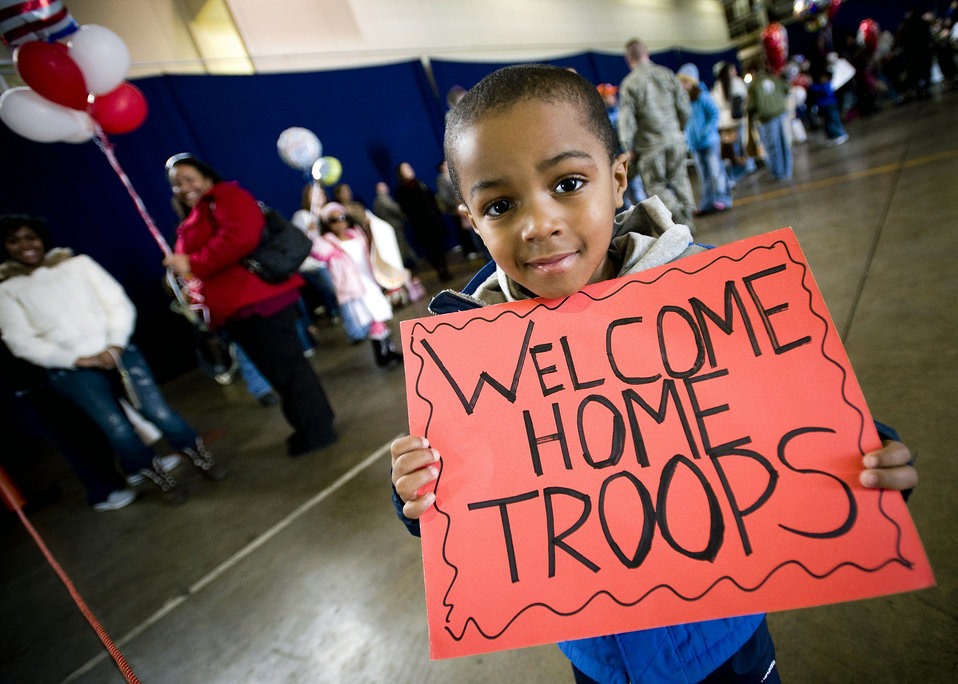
Misawa officials welcome home 300 deployed Airmen

John Parker Jr. displays a sign celebrating his father's return March 1 at Misawa Air Base, Japan. John waited with many other base members for the passenger airplane bringing friends and families home. John and his family are from Houston.